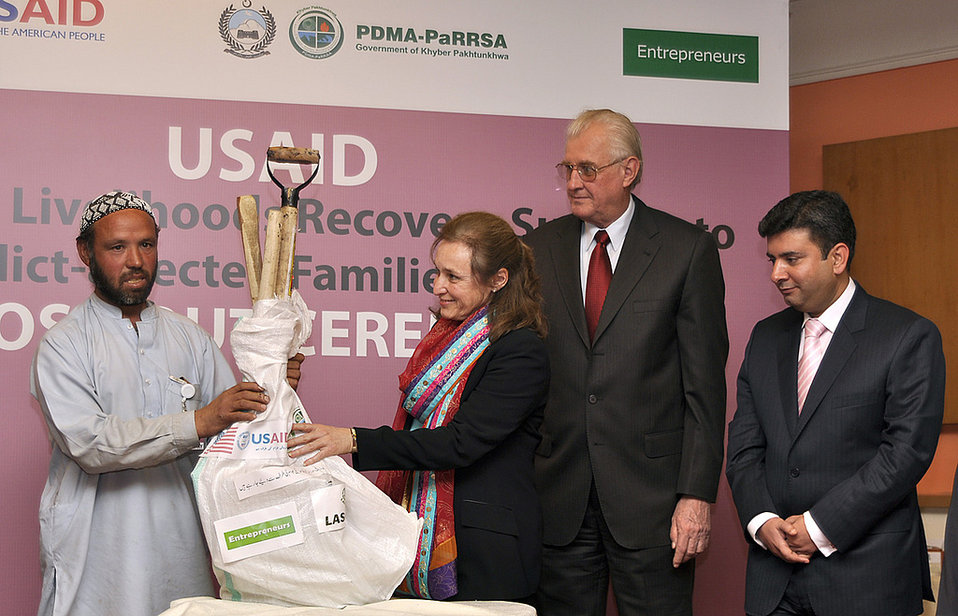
USAID's Malakand Livelihoods Recovery Support to Conflict-affected Families Project

Peshawar, January 29, 2011 - Ms. Constance Arvis, Acting U.S. Consul General in Peshawar, is handing over a farming tool kit to a microgrant recipient from district Swat under USAID's Malakand Livelihoods Recovery Support to Conflict-affected Families Project. Others in the picture are Mr. Edward Birgells, Regional Director, U.S. Agency for International Development (USAID), Pakistan; and Mr. Shakeel Qadir Khan, Director General, Provincial Reconstruction, Rehabilitation and Settlement Authority (PaRRSA), Government of Khyber Pakhtunkhwa.